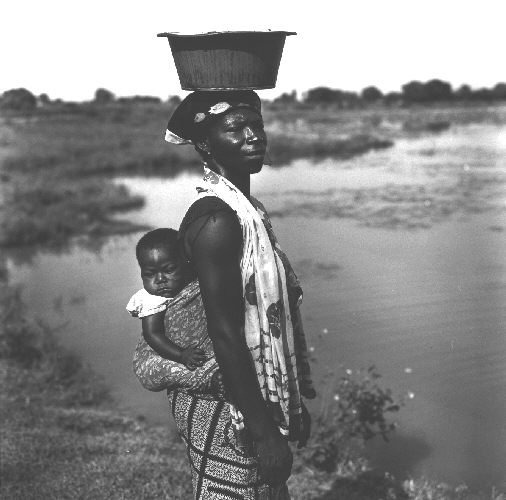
Woman and child by guinea worm infested lake, northern Ghana.